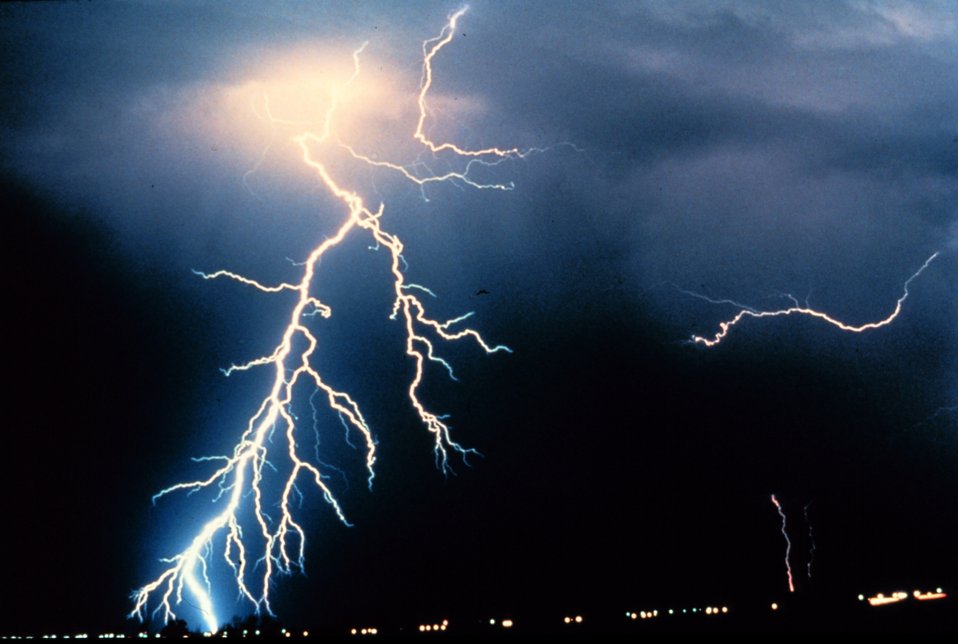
Multiple cloud-to-ground and cloud-to-cloud lightning strokes during night-time. Observed during night-time thunderstorm.